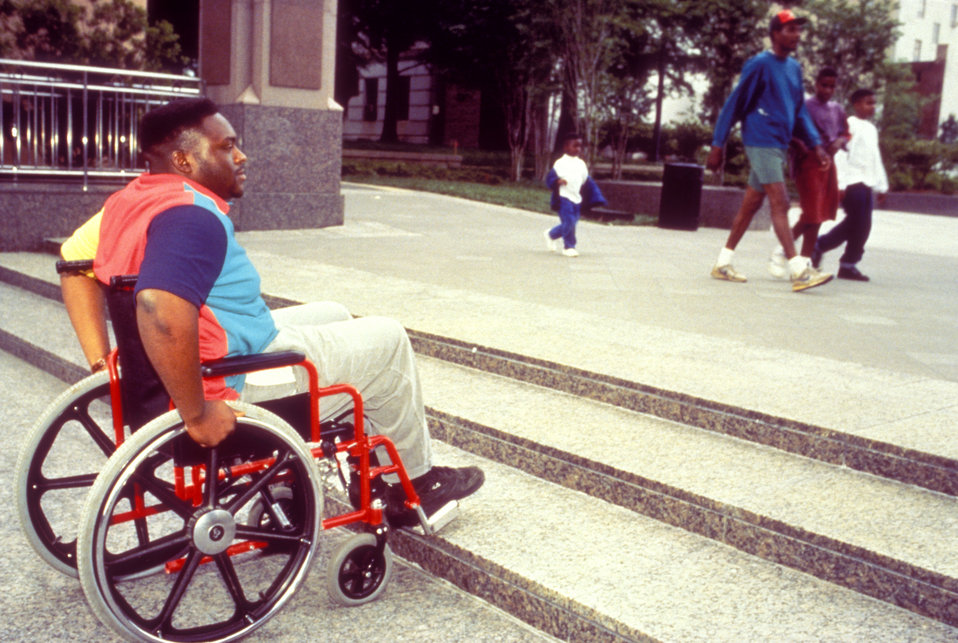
Confronted with the prospect of having to ascend these steps, even though they were only a few inches in height, without assistance from another relatively strong person, this wheelchair-seated man was unable to proceed on his intended path. In this instance, thought was not put into the accommodation of such mobility-challenged people having to move around this publicly-accessible courtyard. These seemingly innocuous steps were actually acting as a barrier to wheelchair users.